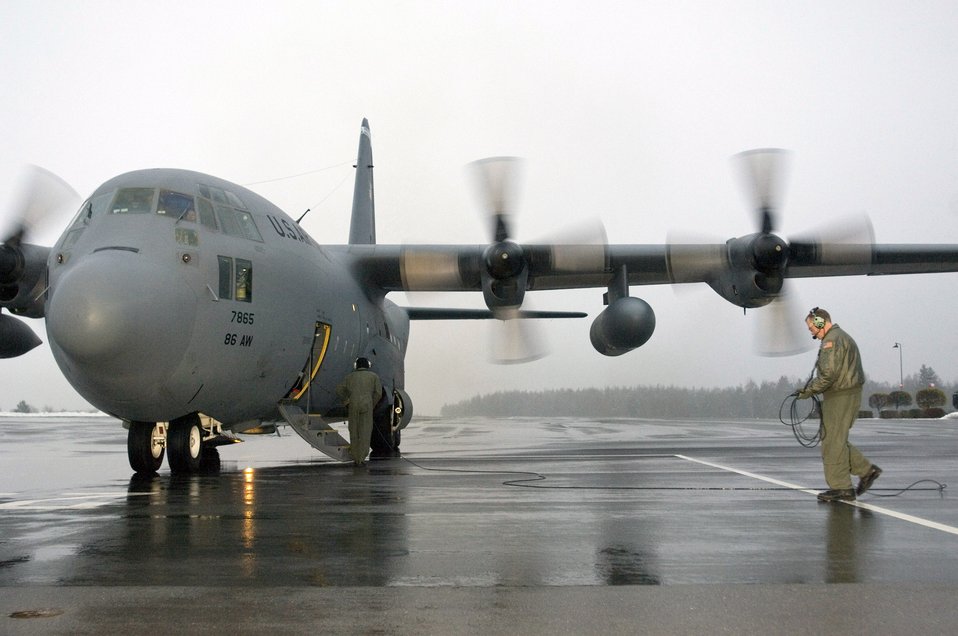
Mission time

GRAFENWOEHR, Germany (AFPN) -- Master Sgt. Bill Gatzmer gathers his communications cable before reboarding his C-130 Hercules. Sergeant Gatzmer was one of two loadmasters on the mission to transport Romanian soldiers and their gear to Grafenwoehr, Germany, for training. He is with the 37th Airlift Squadron at Ramstein Air Base, Germany.